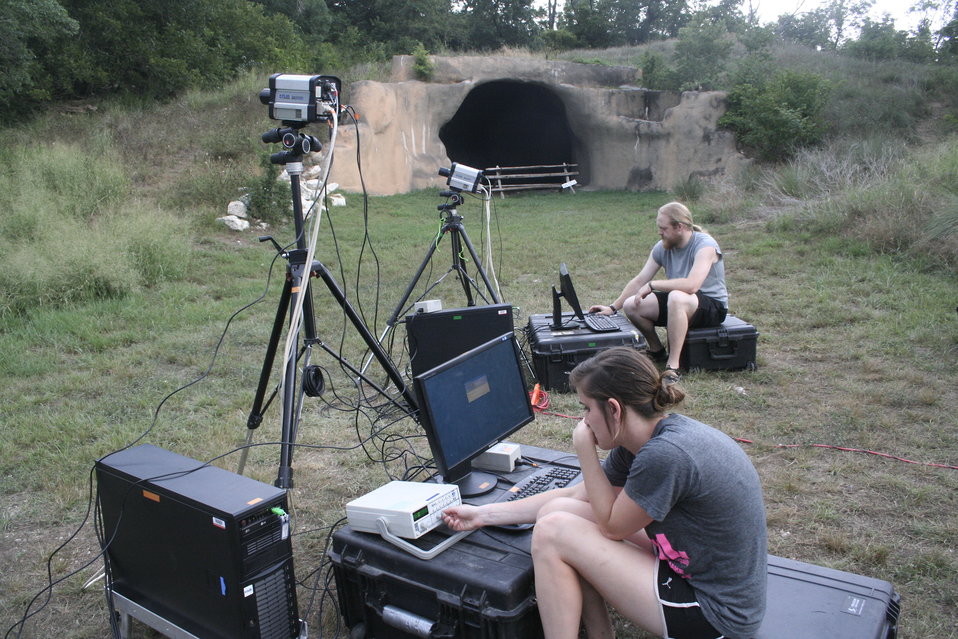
Setting up equipment